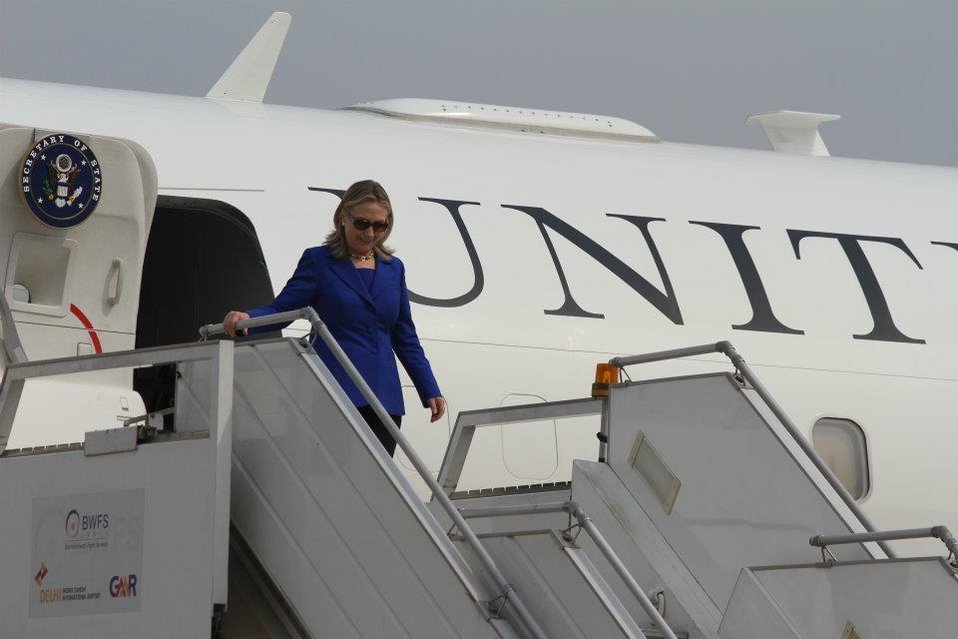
Secretary Clinton Arrives in New Delhi

U.S. Secretary of State Hillary Rodham Clinton arrives in New Delhi, India, on May 7, 2012.